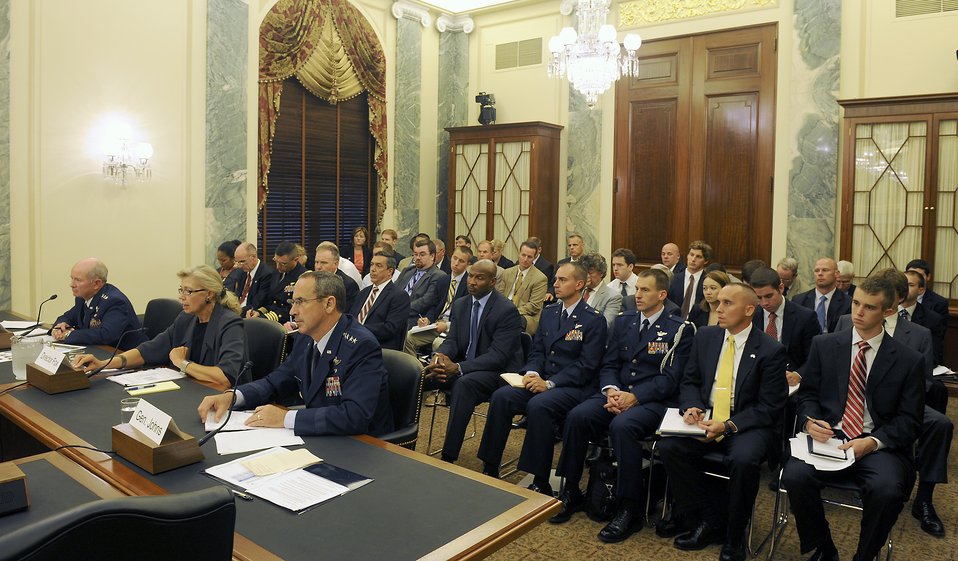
Air Force looks to reduce strategic airlift inventory

Department of Defense and military officials testified before the Senate Armed Services Subcommittee on Seapower in Washington, D.C., July 13, 2011. Testimony included the budget request to lower the 316 strategic airlift floor to 301 aircraft at a cost savings of more than $1.2 billion in taxpayer dollars across the Future Years Defense Plan. Seated from right are Gen. Raymond Johns, the Air Mobility Command commander; Christine Fox, the Department of Defense Cost Assessment and Program Evaluation director; and Gen. Duncan McNabb, the U.S. Transportation Command commander.